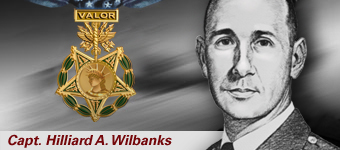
Capt. Hilliard Wilbanks, Medal of Honor recipient for actions in the Vietnam War.